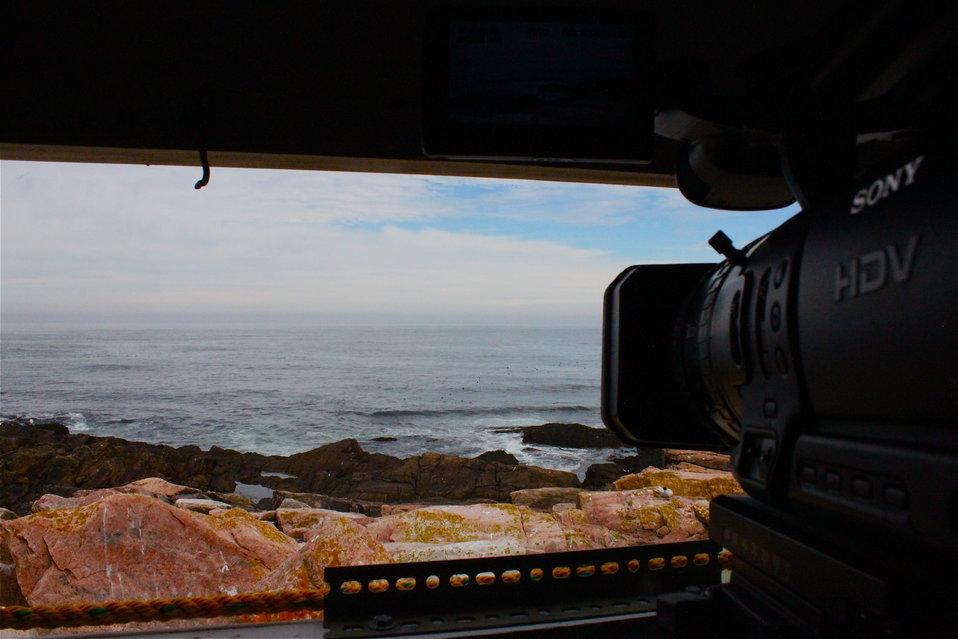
Inside A Blind